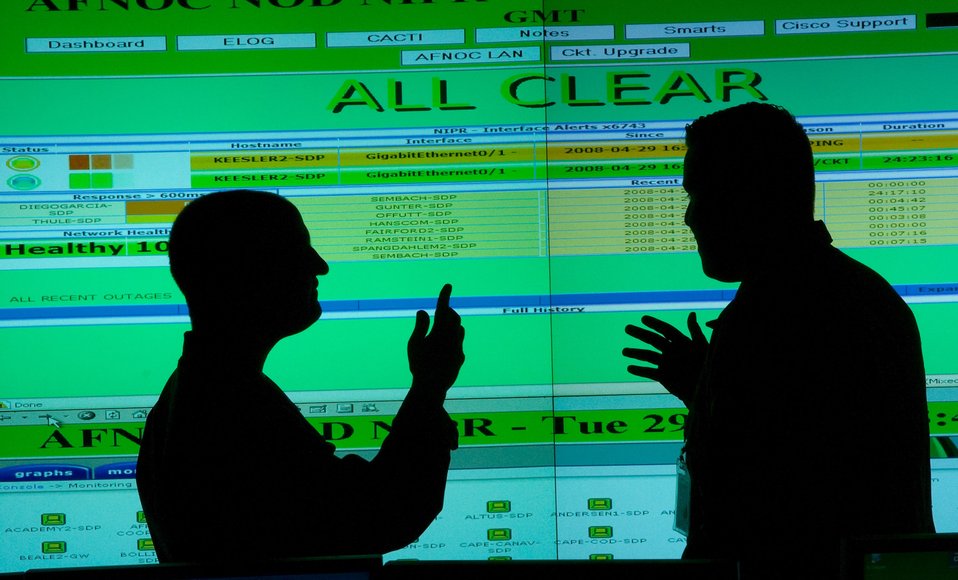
Network's clear

At the Cyber Command (Provisional) network center at Barksdale Air Force Base, La., Staff Sgts. Benjamin Lockwood (left) and Andrew Corriveau discuss operational status April 29 in front of a large projection screen.